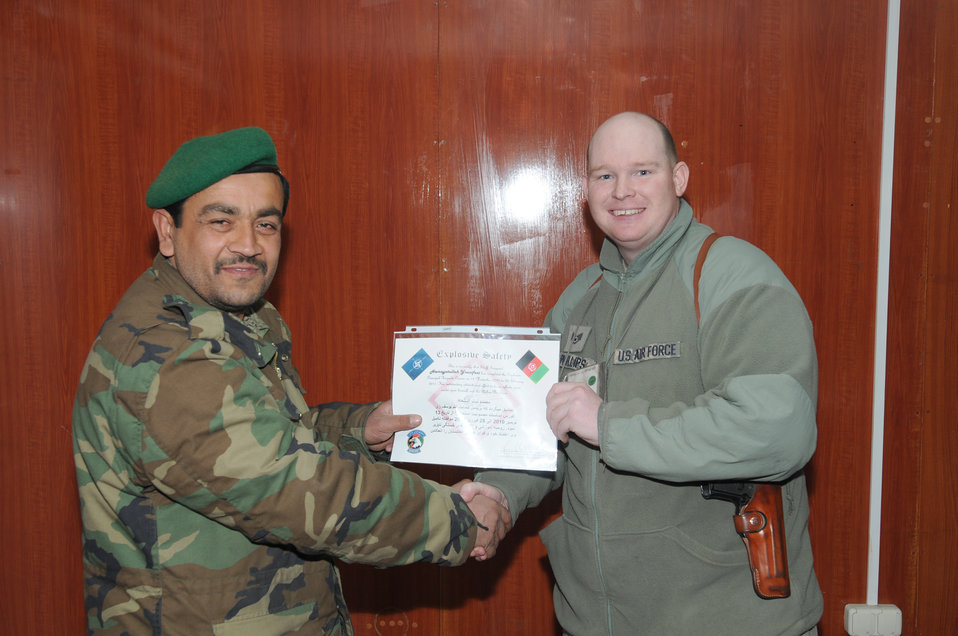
AAF officials graduate first weapons safety NCO

Afghan air force Sgt. Yosufzai Hamayattullah receives a certificate for graduating the two-month basic explosives hazards course March 15, 2011, at an AAF Base in Kabul, Afghanistan. Hamayattullah is the first weapons safety NCO in the AAF.